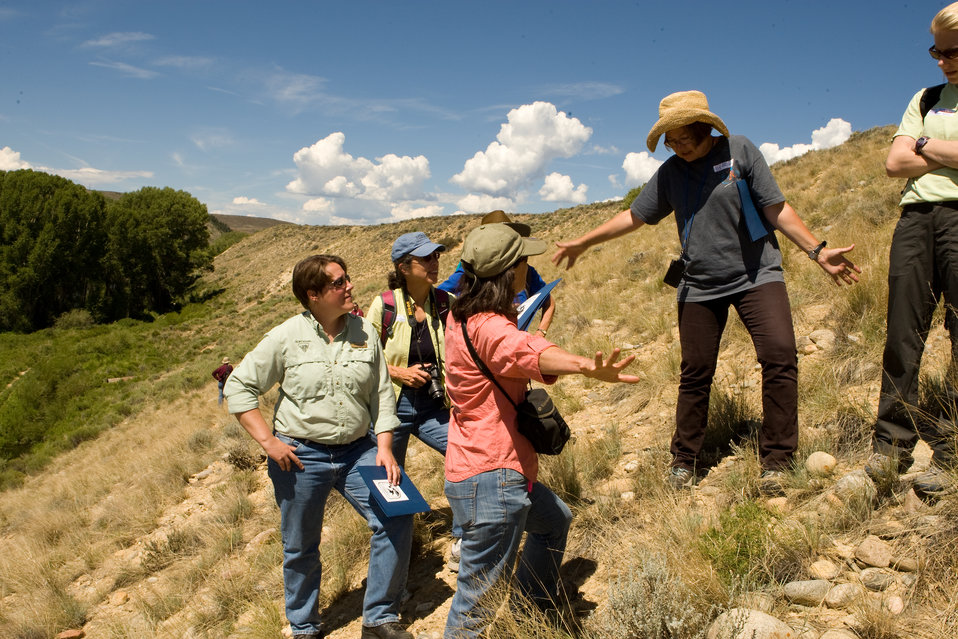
Colorado Rare Plant Conservation Initiative

The Colorado Rare Plant Conservation Initiative (RPCI) is a partnership of 23 statewide and regional agencies, private organizations, and academic institutions working to conserve 121 rare plants in Colorado. As part of these efforts the group developed the Colorado Rare Plant Conservation Strategy, developed Best Management Practices to reduce energy development impacts, addressed climate change, and developed focused strategies for the conservation of individual species at eight priority landscapes. The group has also worked to coordinate volunteer efforts for plant conservation across the state.